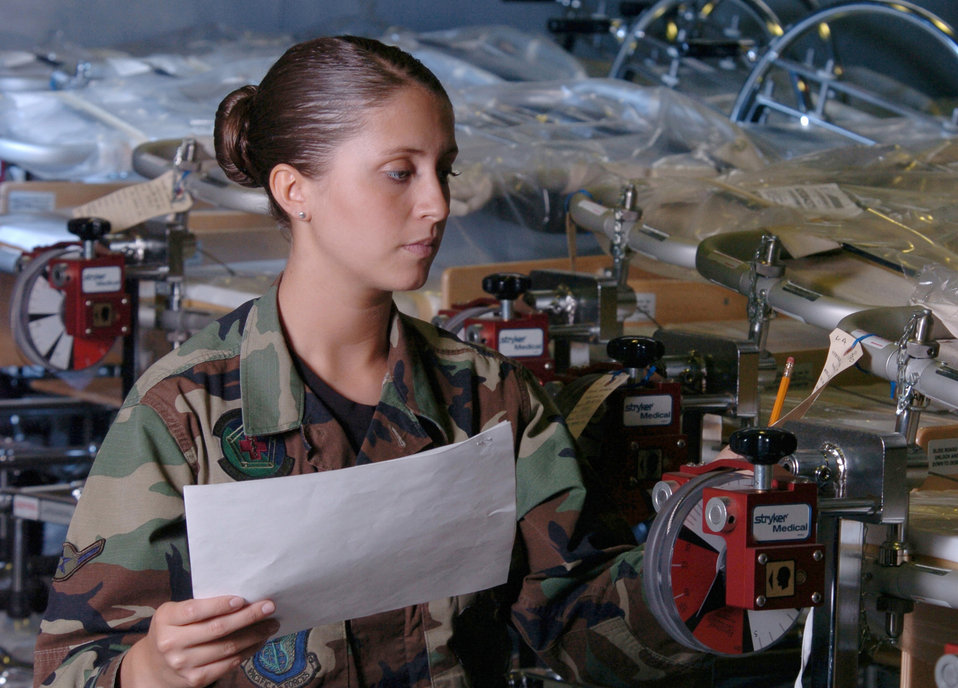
Bed check

YOKOTA AIR BASE, Japan -- Airman Camille Giffin inventories a row of turn frame orthopedic beds here during routine inspection. The beds are used to stabilize patients with back injuries. Airmen from the logistics flight here store, maintain and deploy about $12 million worth of medical war reserve materiel for servicemembers from the 374th Airlift Wing, 5th Air Force and U.S. Forces Japan. Airman Giffin is a medical logistics technician with the 374th Medical Group.